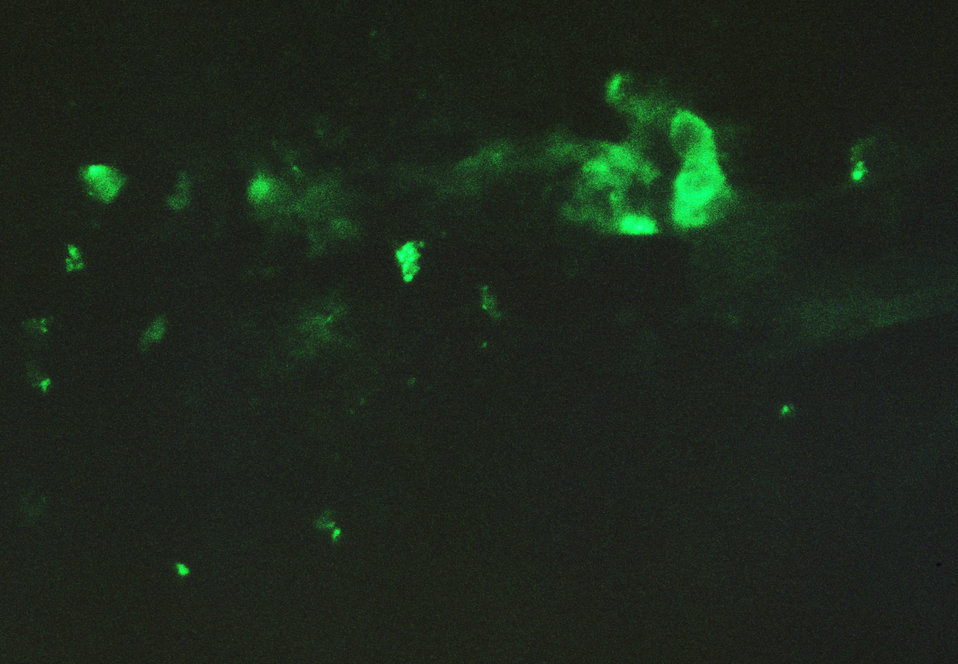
A photomicrograph of a chick chorioallantoic membrane; fluorescent antibody staining was done after smallpox virus inoculation.